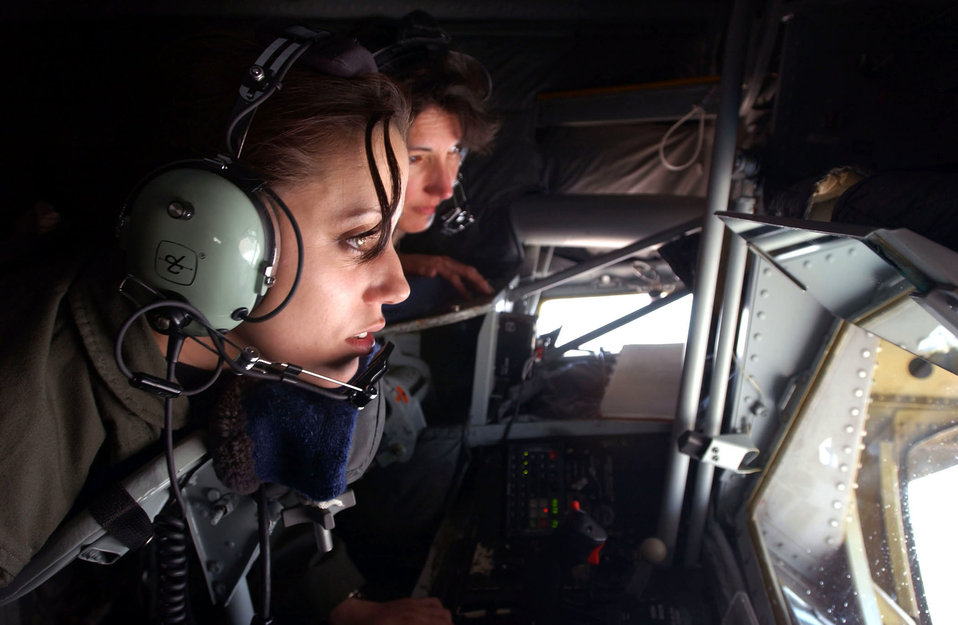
Boomer sortie

SOUTHWEST ASIA -- Airman Edel Brooks (left), a boom operator from the 911th Air Refueling Squadron, Grand Forks Air Force Base, N.D., works with a